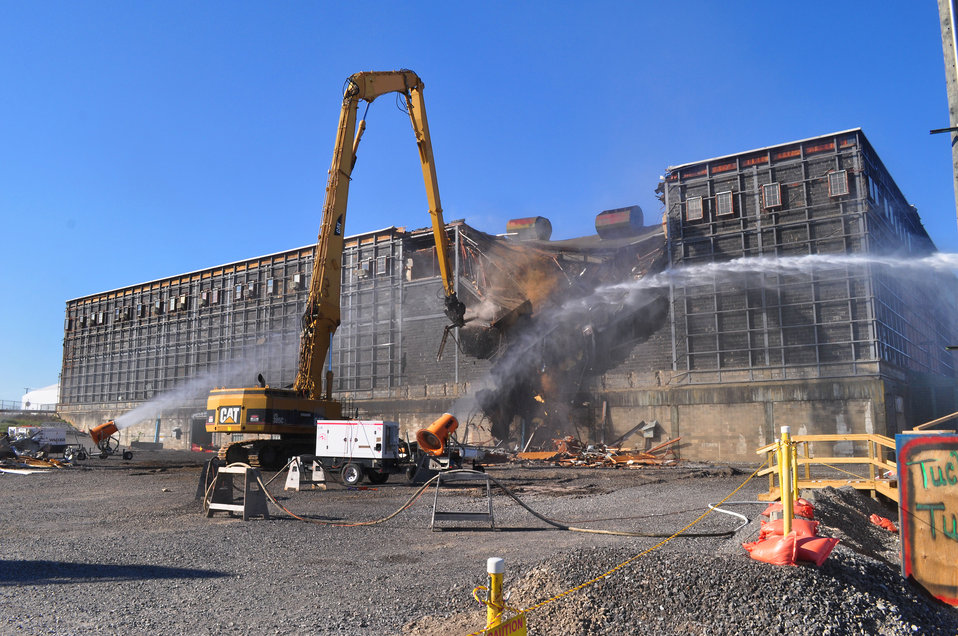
12

K-25 North Tower